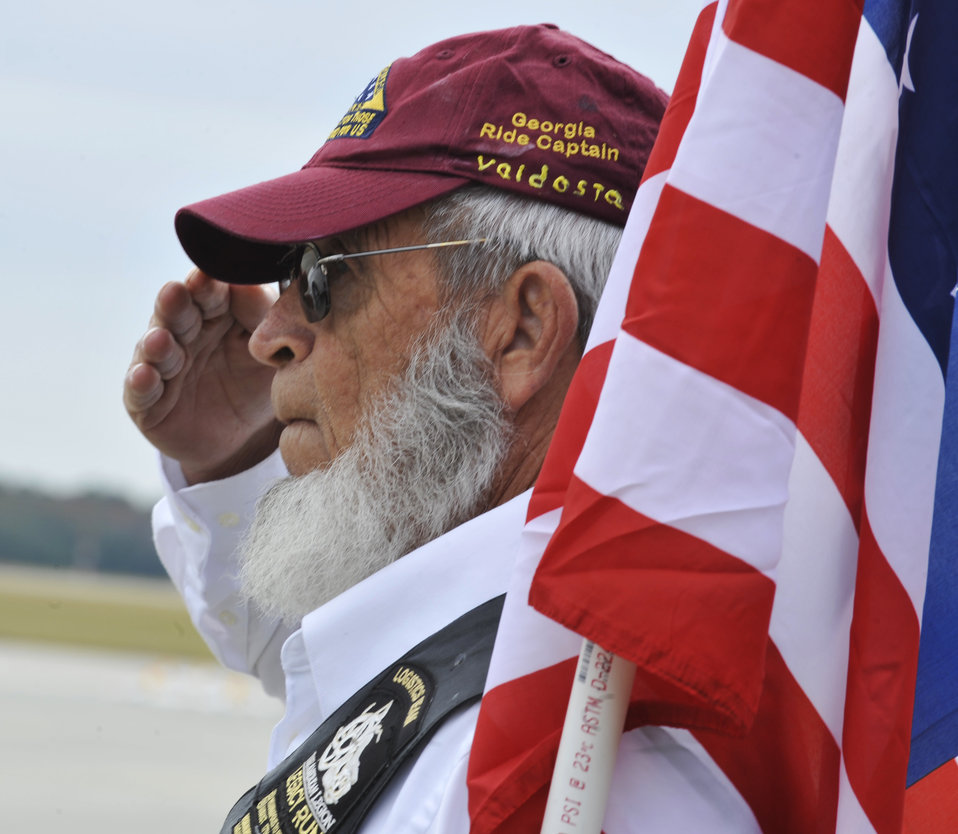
Moody community pay respect to fallen warrior

Willie Black salutes fallen warrior Army Staff Sgt. Briand Williams Dec. 3, 2009, at Moody Air Force Base, Ga. Sergeant Williams served in the Army since 2002 and was killed in action in Iraq Nov. 22, 2009. He was assigned to the 1st Battalion, 10th Field Artillery Regiment, 3rd Brigade Heavy Combat Team, 3rd Infantry Division at Fort Benning, Ga. Mr. Black is a member of the Patriot Guard Riders.